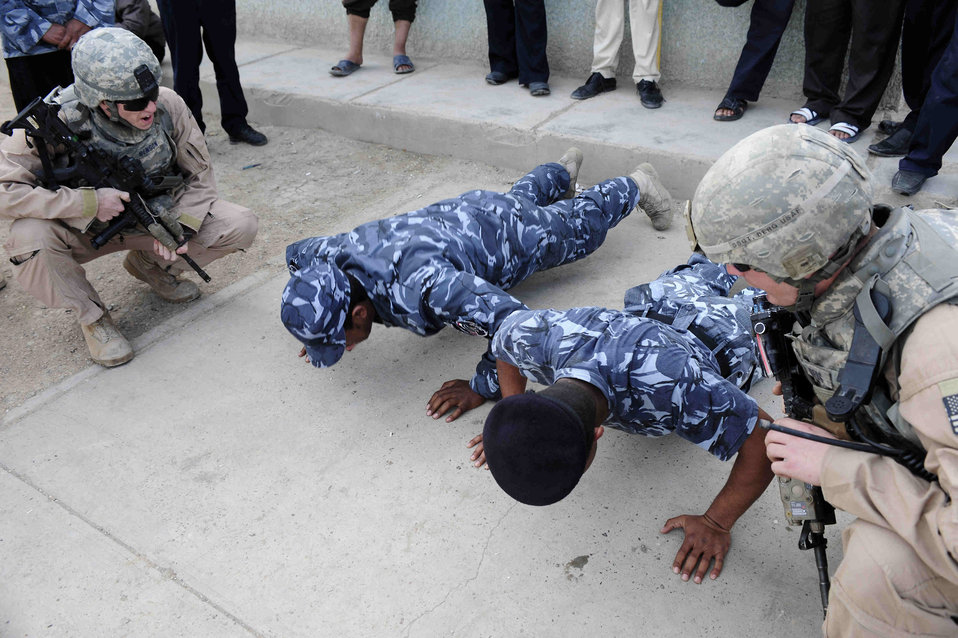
Security forces unit provides combat support to Iraq

Staff Sgt. Michael Berg yells at the Iraqi policemen to add stress during the badging test at Rashid, Iraq, Feb. 13. The yelling is added to ensure that the policemen can perform their duty under stressful conditions. Sergeant Berg is a member of the 732nd Expeditionary Security Forces Squadron, Detachment 3, Charlie Flight